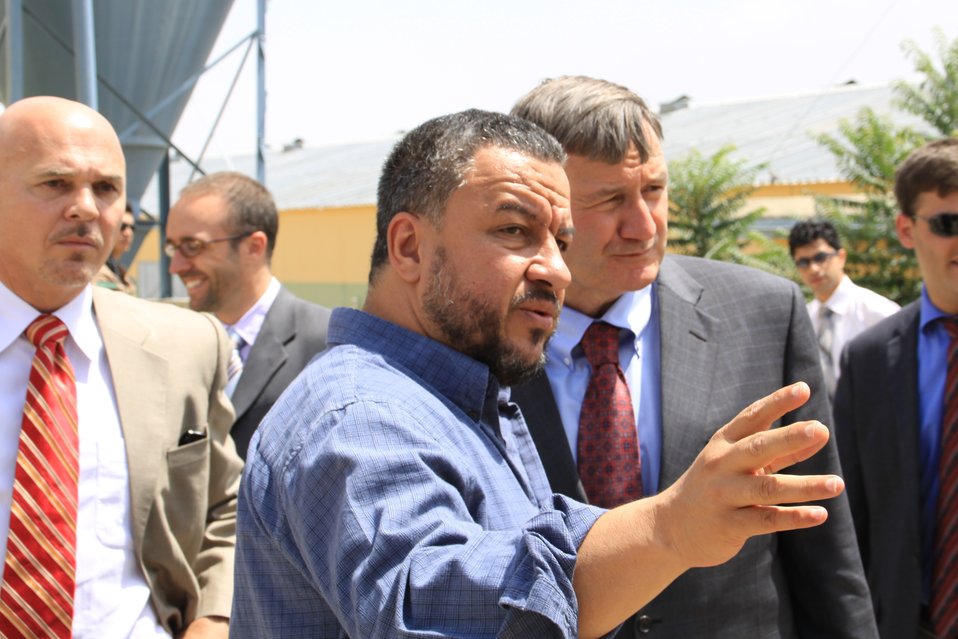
Badam Bagh Farm